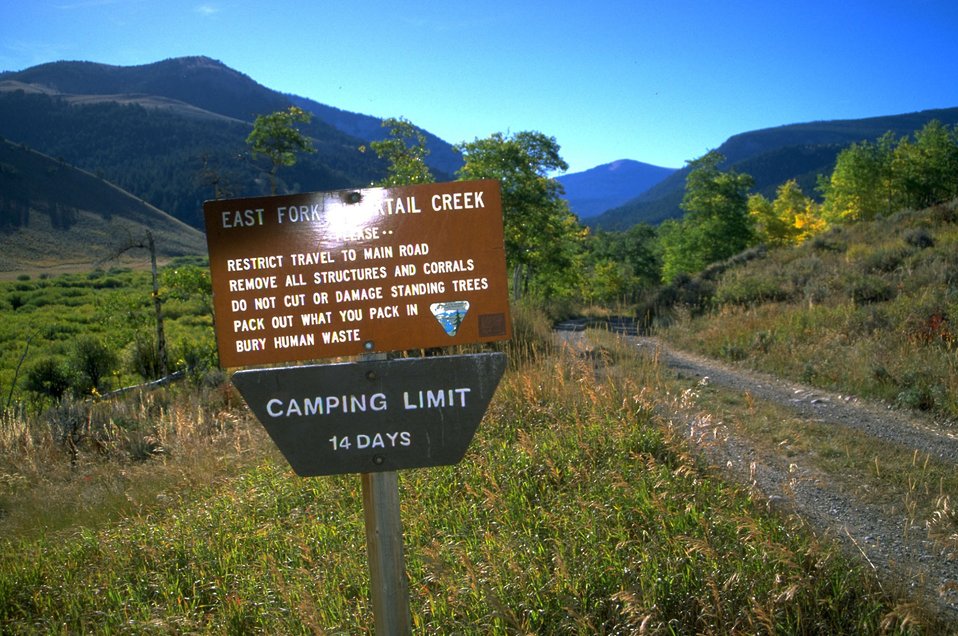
Sign for East Fork Blacktail Creek Campground